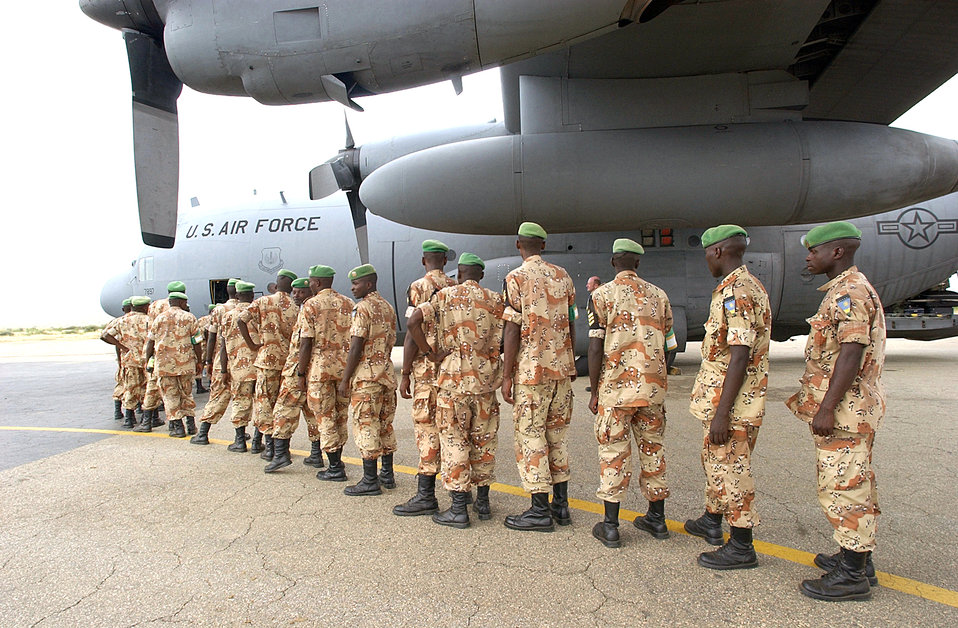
Back to Rwanda

SUDAN -- Rwandan peacekeepers prepare to board a C-130 Hercules from Ramstein Air Base, Germany, on Oct. 4. The peacekeepers are departing the Darfur region of Sudan and returning to Rwanda after a six-month deployment supporting the African Union Missions.